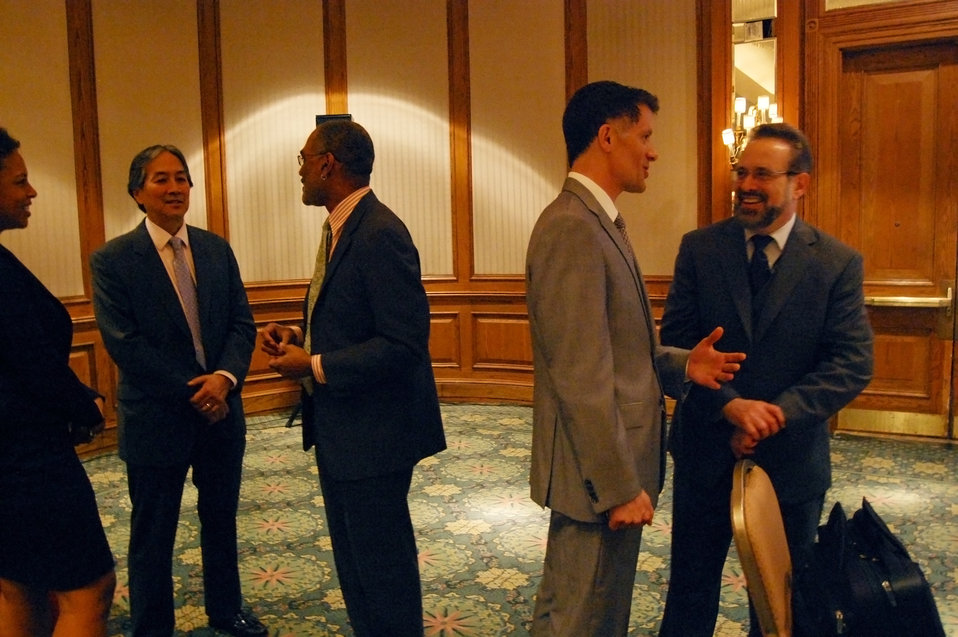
PACHA conf027